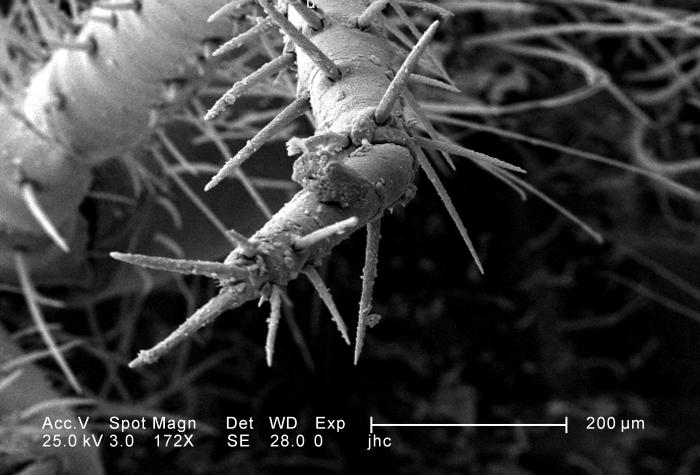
Under a relatively-low magnification of 172X, this scanning electron micrograph (SEM) revealed the ultrastructural features found at the distal tip of this larval-staged antlion's spike-studded foreleg. This larva is sometimes referred to as a 'doodlebug', because of the trails it leaves in the soft sand as it hunts for prey. This arthropod, i.e., jointed legs, undergoes dramatic morphologic changes when it metamorphoses into a beautiful flying antlion lacewing.